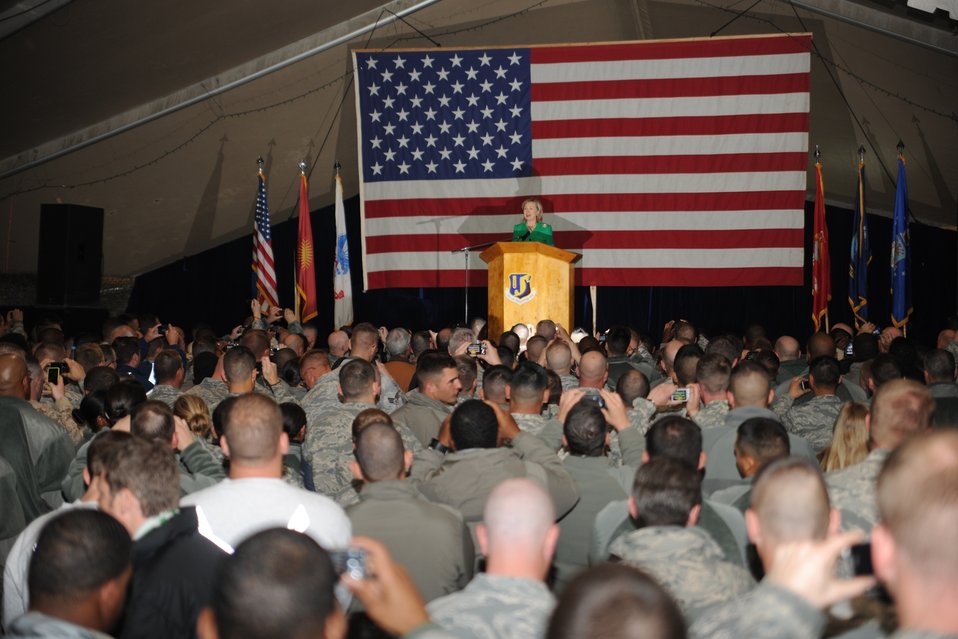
Secretary Clinton Speaks With U.S. Troops

U.S. Secretary of State Hillary Rodham Clinton speaks with U.S. troops at the Manas Transit Center in Kyrgyzstan on December 2, 2010.